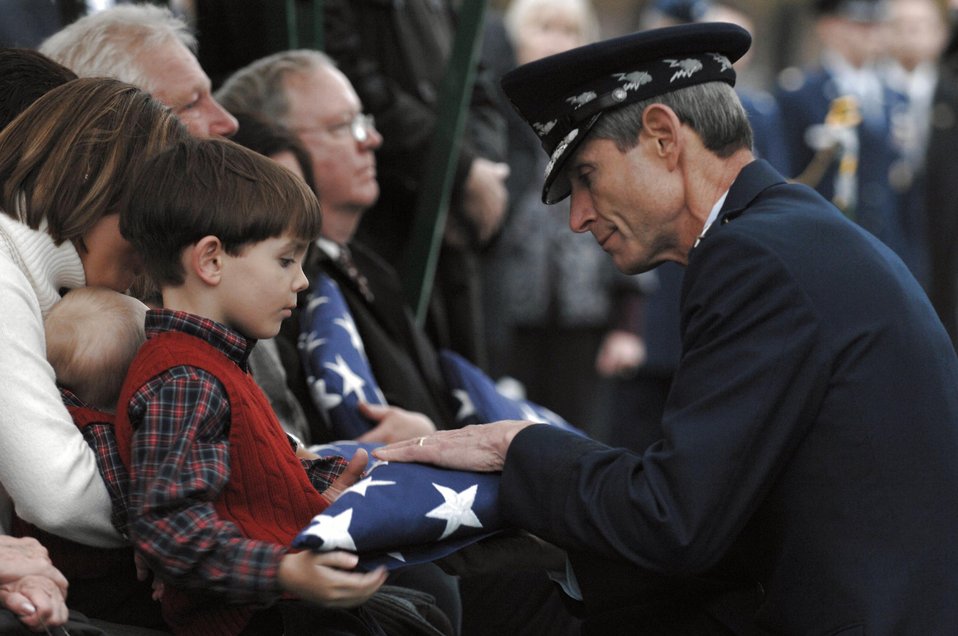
On behalf of a grateful nation

Air Force Chief of Staff Gen. Norton Schwartz hands a folded flag to one of the family members of the fallen B-52 Stratofortress crew Nov. 14 at Arlington National Cemetery in Virginia. A group burial took place for the crew that crashed July 21 off Guam's northwest coast.